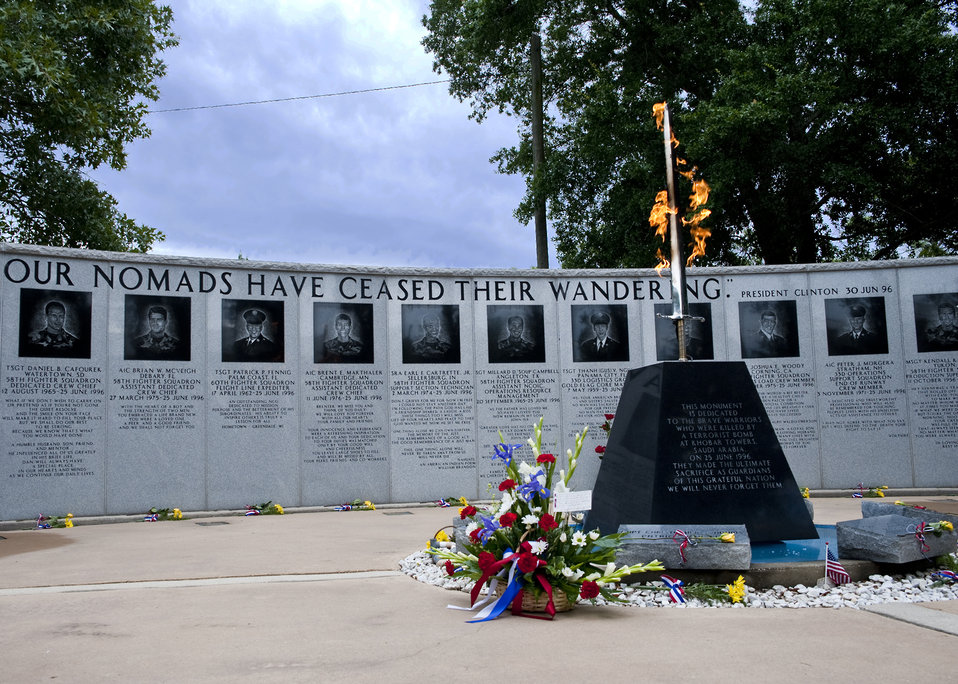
Khobar Towers memorial

The Khobar Towers eternal flame monument and memorial wall at Eglin Air Force Base, Fla., were dedicated one year after the Khobar Towers bombing June 25, 1996.